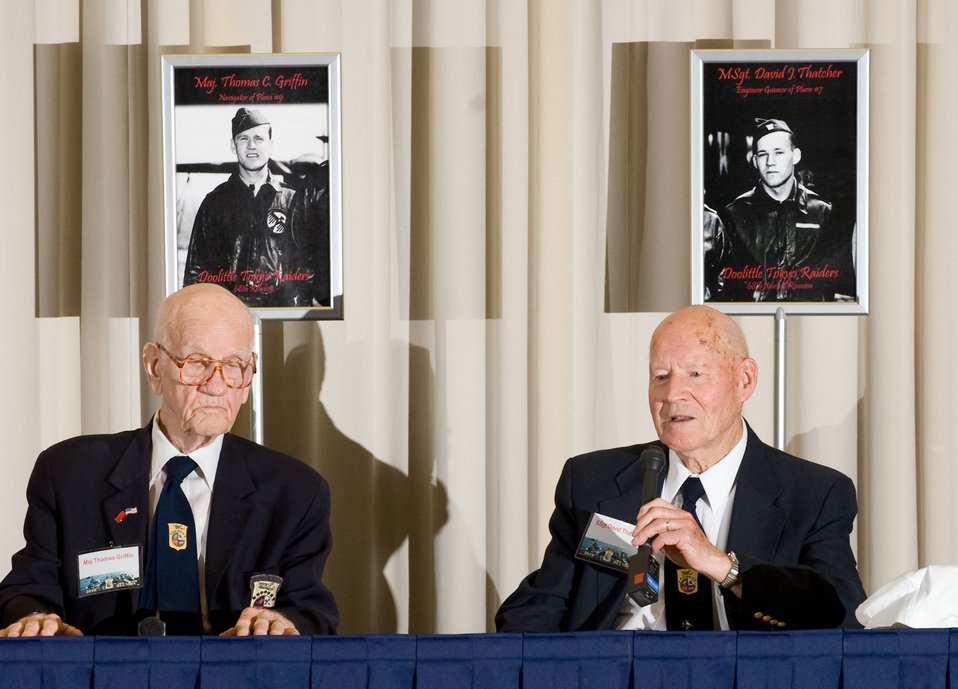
Doolittle Tokyo Raiders' panel

(Left-right) Doolittle Raiders Major Thomas Griffin, and Master Sgt. David J. Thatcher participate in a question and answer session with the news media at the National Museum of the U.S. Air Force at Wright-Patterson Air Force Base, Ohio on April 16, 2010.